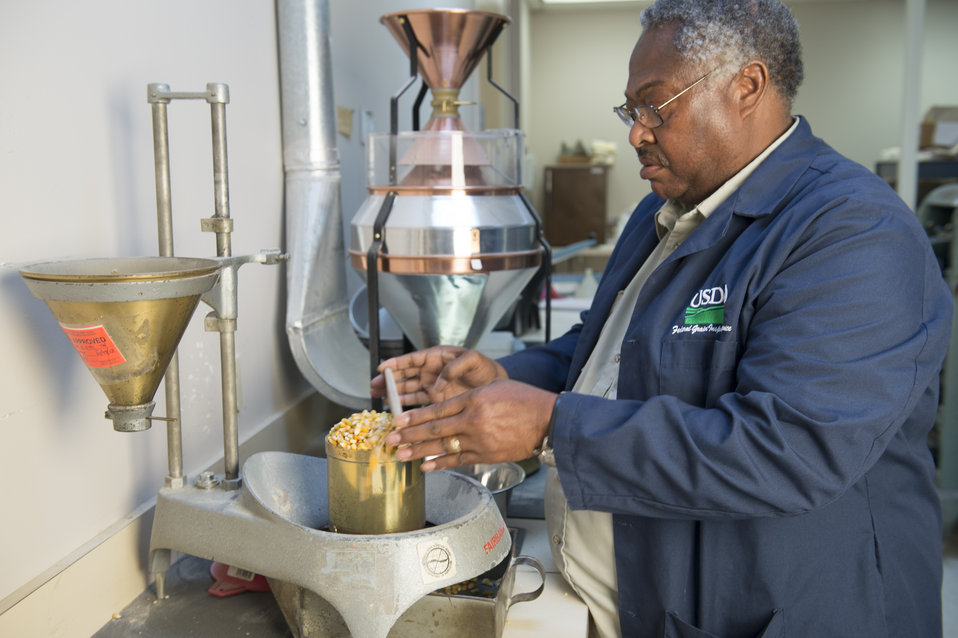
A U.S. Department of Agriculture (USDA) Grain Inspection, Packers and Stockyards Administration (GIPSA) Federal Grain Inspection Service (FGIS) scientist tests corn at the FGIS inspection laboratory in New Orleans, LA on Monday, Nov. 18, 2013.